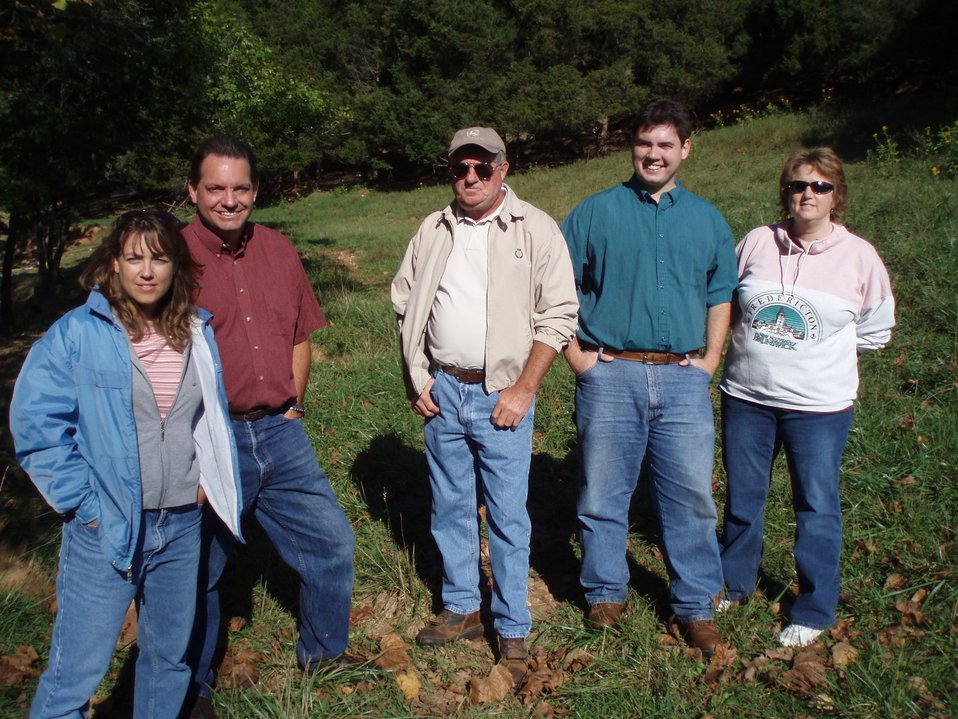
USFWS Biologists and Partners at a habitat restoration site

From left to right; Kim Smith (USFWS), David Byrd (USFWS), P.W. Morgan (Blue Ridge Soil and Water Conservation District), Tony Goff (Blue Ridge Soil and Water Conservation District), Bridgett Costanzo (USFWS).